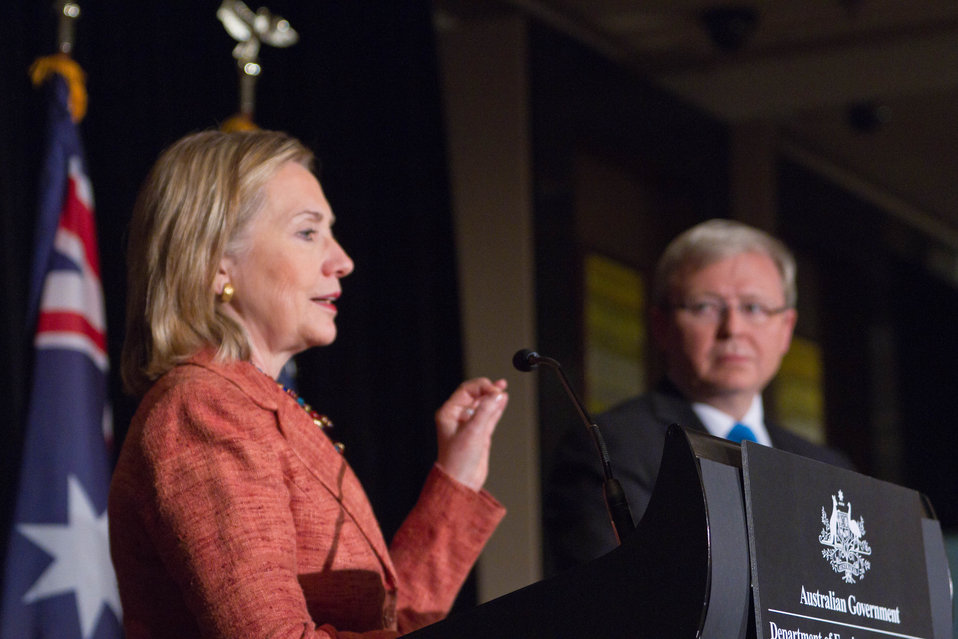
Secretary Clinton and Australian Foreign Minister Rudd Hold a Joint Press Conference

U.S. Secretary of State Hillary Rodham Clinton and Australian Foreign Minister Kevin Rudd hold a joint press conference in Melbourne, Australia, on November 7, 2010.